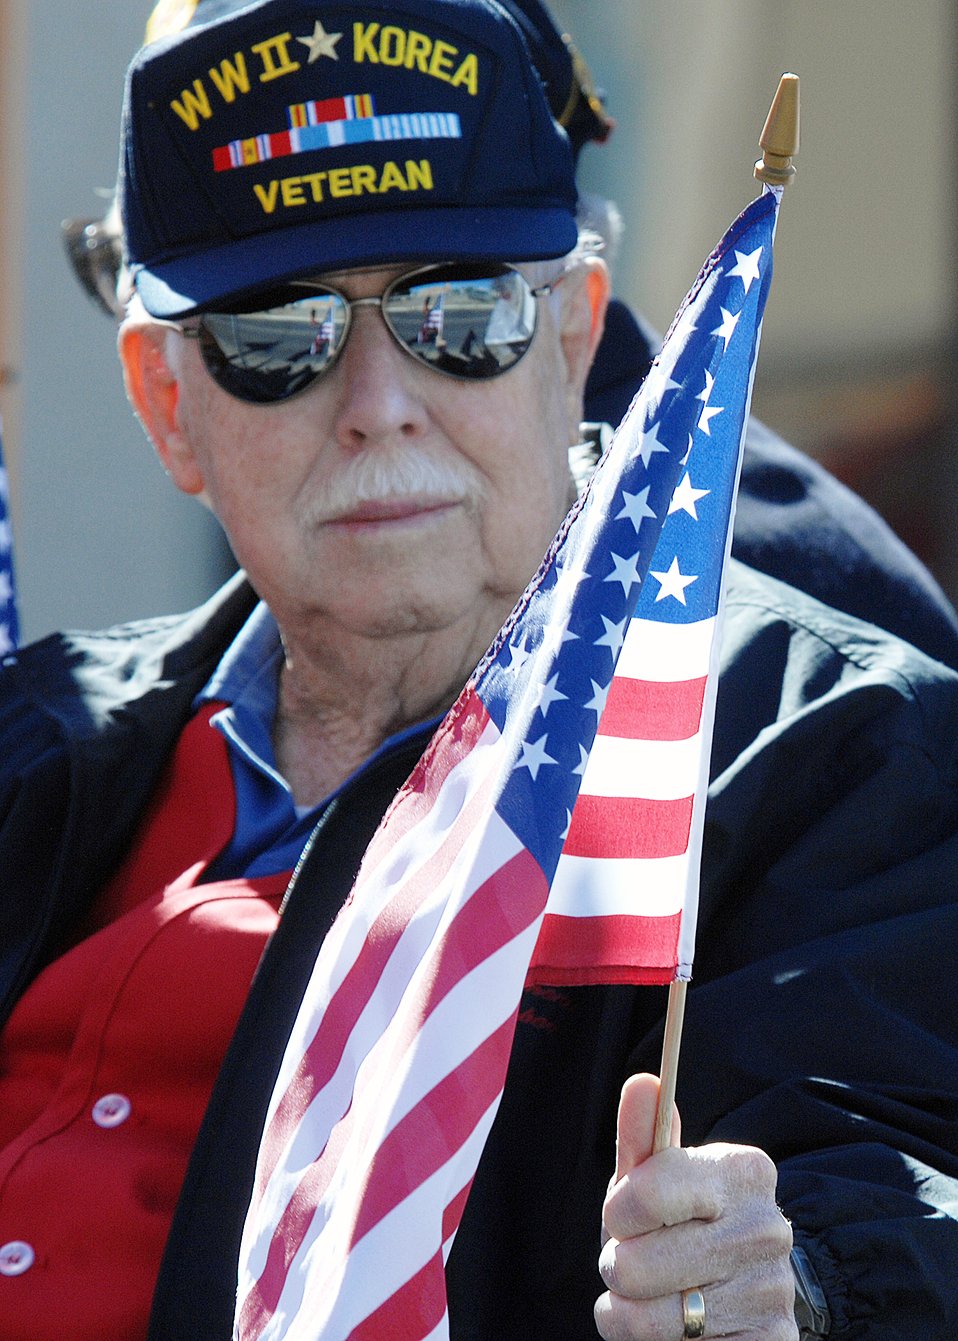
I served 'Old Glory'

A World War II and Korean War veteran watches the parade in Alamogordo, N.M., Nov. 8, 2009. The city honored America's veterans, fallen heroes and members who continue to serve with a parade and ceremony.